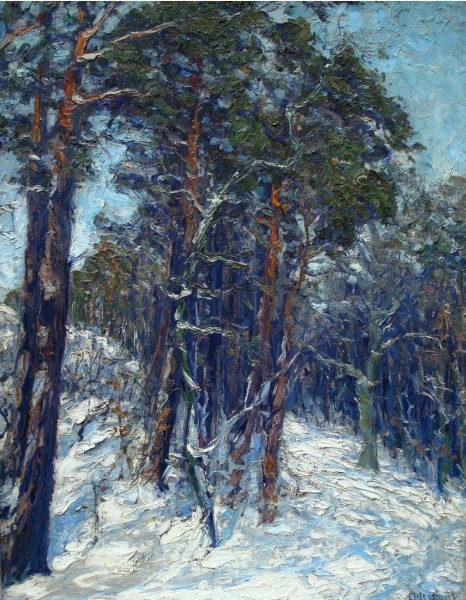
Winterwald, wohl vor 1900, Ölgemälde, 72,5 x 54,5 cm